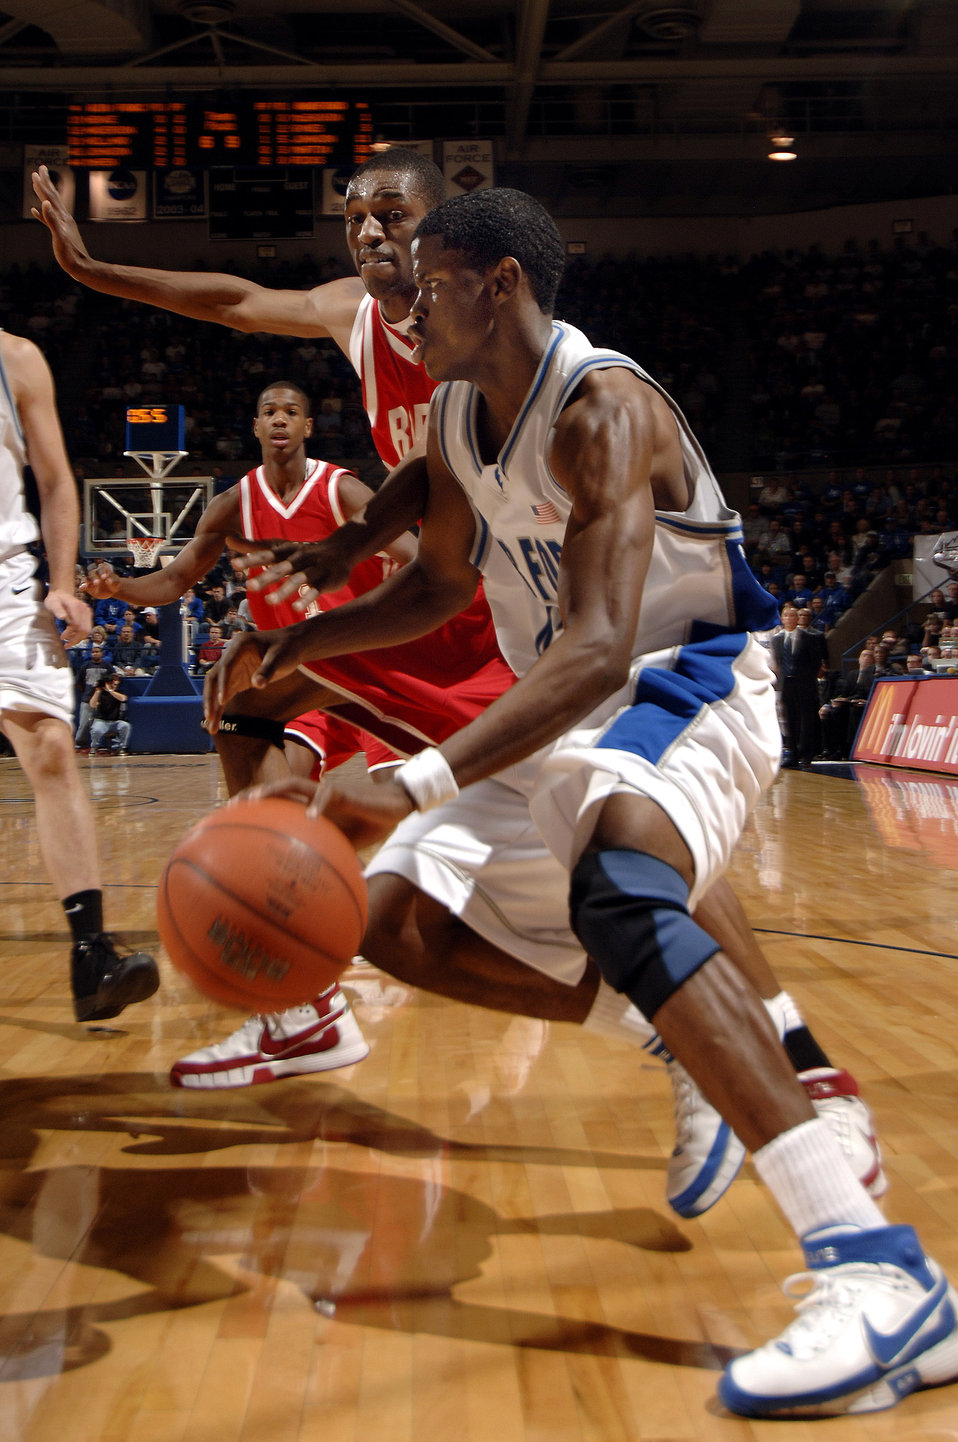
Falcons score overtime victory

Junior forward Amwar Johnson goes under the net as the Air Force Falcons defeated the Radford Highlanders 52-47 in overtime Nov. 19 at Clune Arena. Air Force, under first-year coach Jeff Reynolds, is 4-0 on the season.